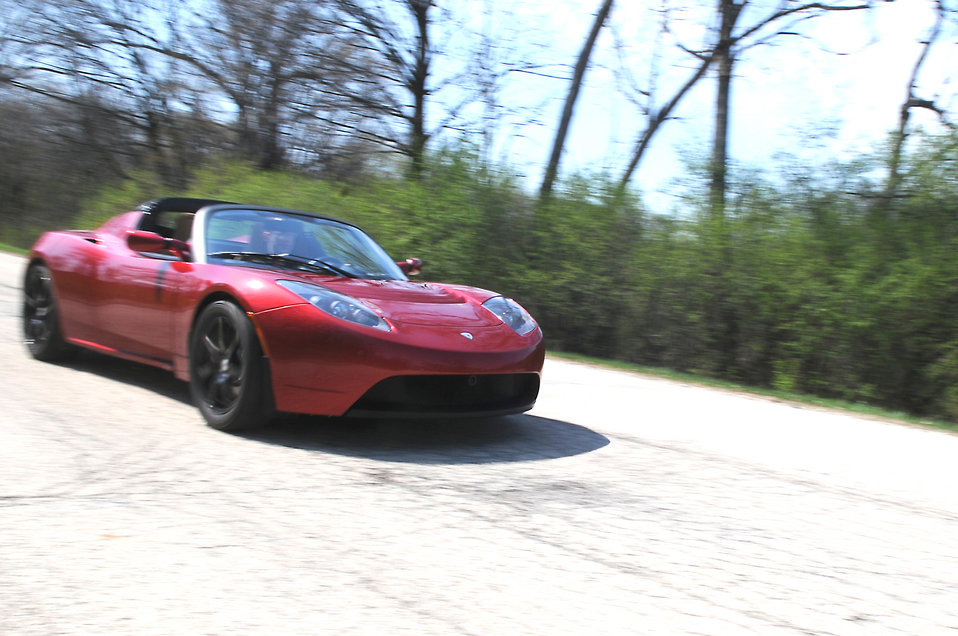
Argonne National Laboratory Transportation engineers recently evaluated an all-electric Tesla Roadster at the Advanced Powertrain Research Facility's new Two-Wheel Dynamometer Laboratory.

Data obtained from the Tesla will help researchers develop test procedures that provide an unbiased, consistent and practical approach to evaluating electric vehicles.